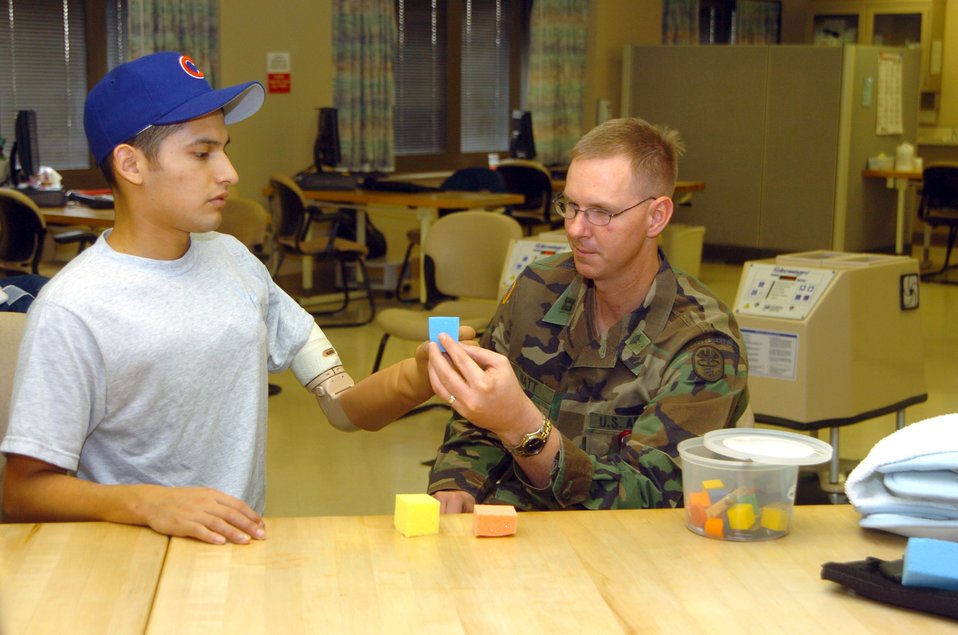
Airman wants to continue to serve

Army Capt. James Watt, an occupational therapist, helps Senior Airman Dan Acosta through some prosthetic arm warm-up drills Thursday, Feb. 23, 2006, in the amputee rehabilitation clinic at Brooke Army Medical Center in San Antonio.